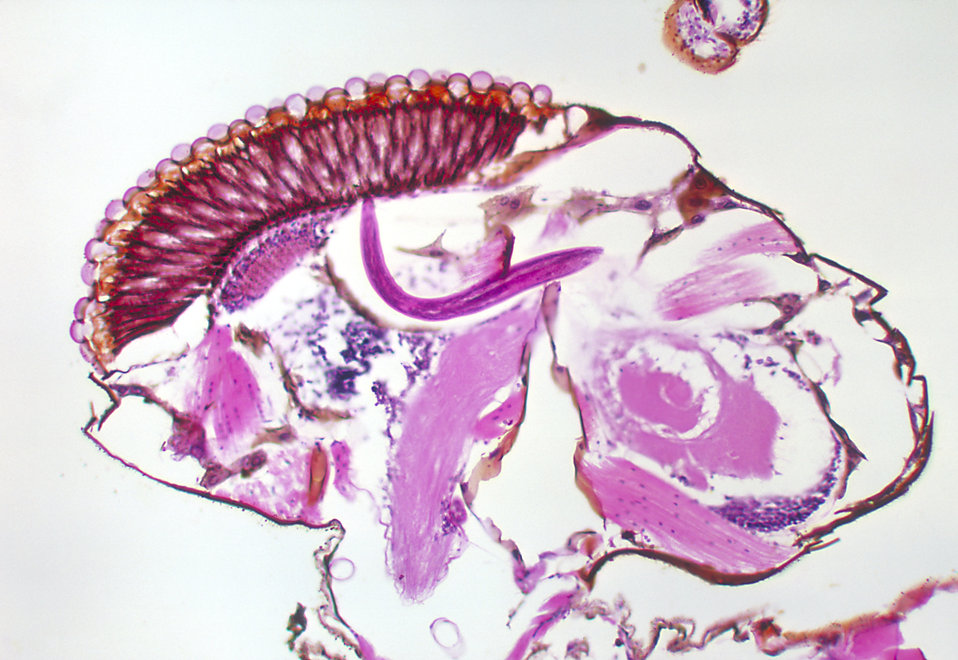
A photomicrograph revealing the histology of Onchocerca volvulus developing in a Black Fly, Simulium ochraceum.